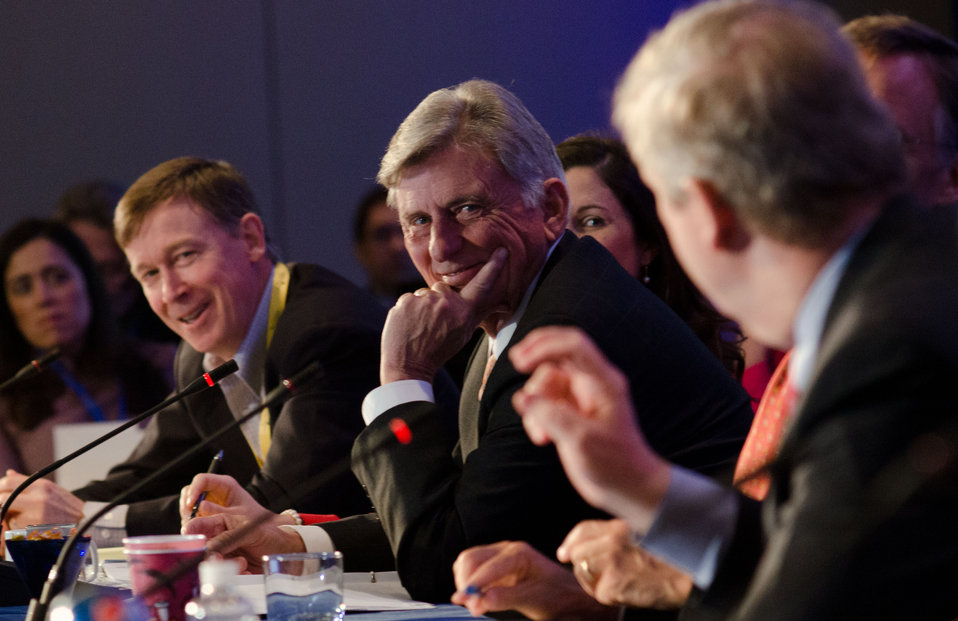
Colorado- Governor John Hickenlooper (second from left) and Arkansas - Governor Mike Beebe (center) smile as Agriculture Secretary Tom Vilsack (right) talked about the many ways the Department of Agriculture can reduce childhood hunger and help the workforce, during the National Governors Association Education, Early Childhood and Workforce Committee meeting in Washington, D.C., on Sunday, February 26, 2012.